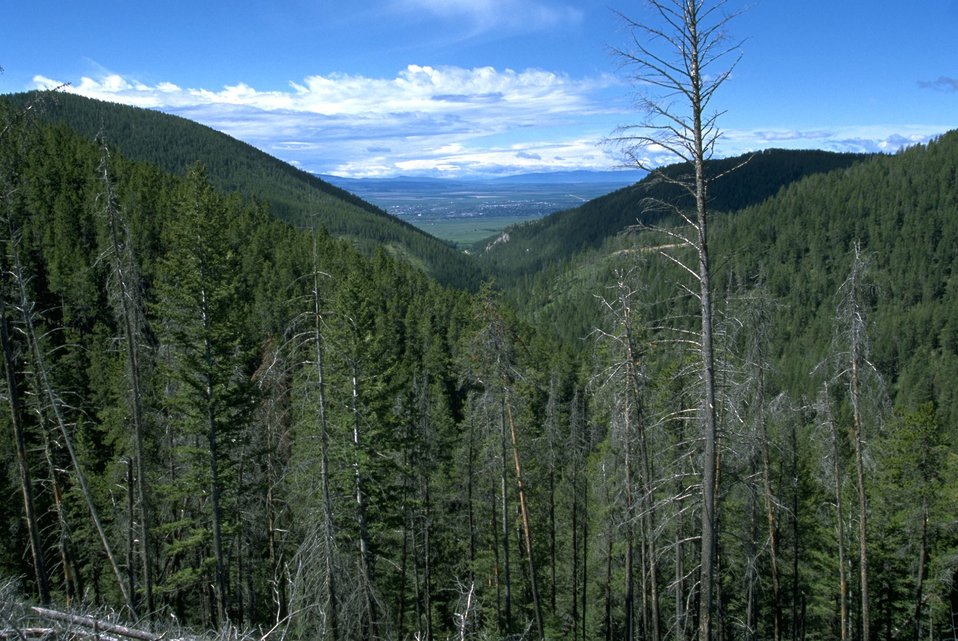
Scenic view of forested mountains with a valley in the distance